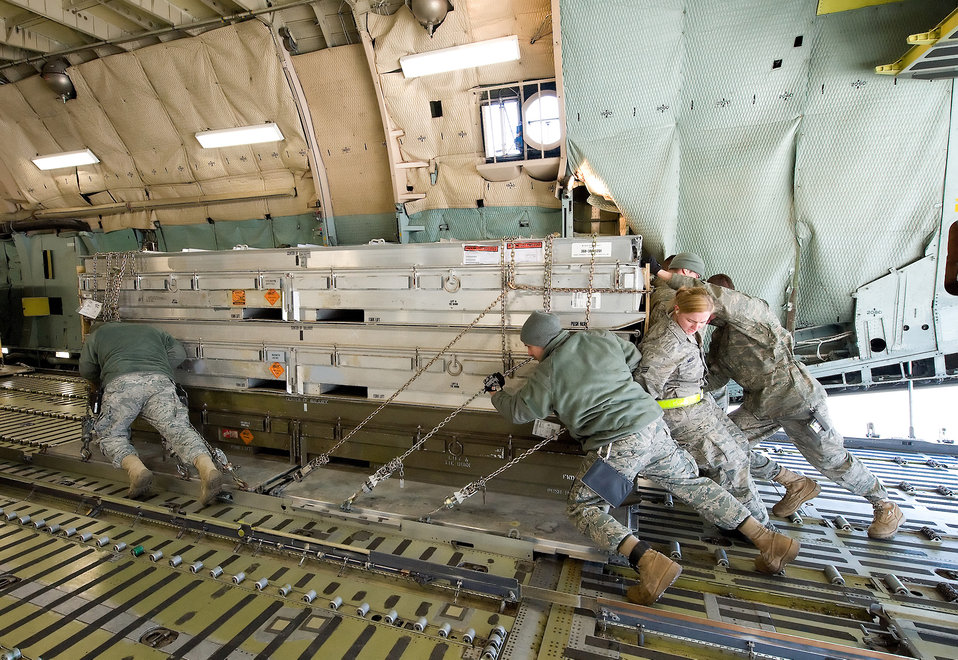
Supporting Operation Odyssey Dawn

Airmen load cargo onto a C-5M Super Galaxy aircraft March 25, 2011, at Dover Air Force Base, Del. The cargo is bound for Italy in support of Operation Odyssey Dawn.